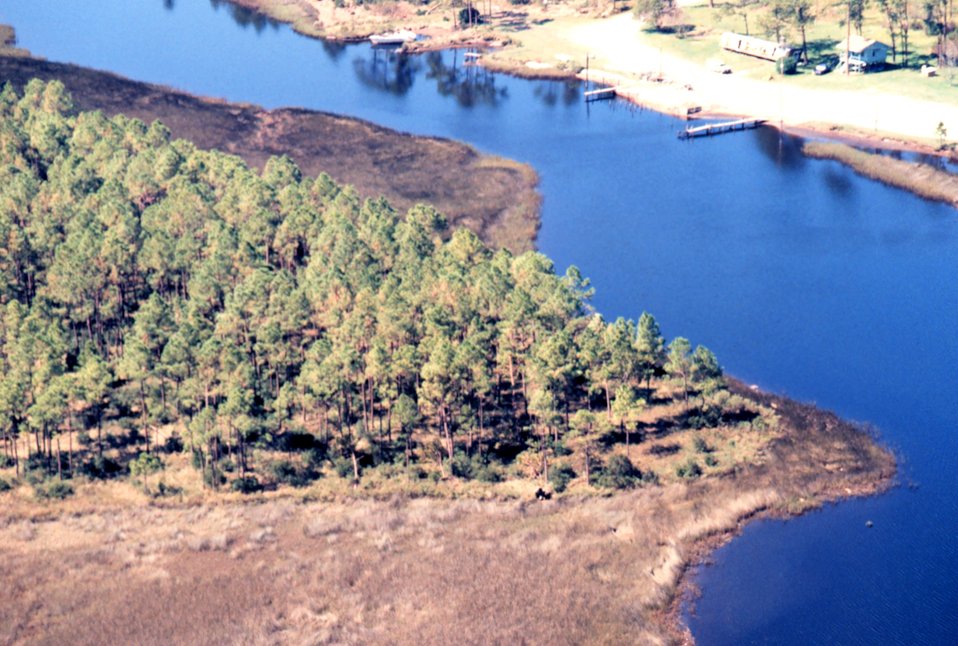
Grand Bay National Estuarine Research Reserve. North showing Bayou Cumbest and Port-o-Pines boat ramp. LSU aerial shoreline survey of October 1998.